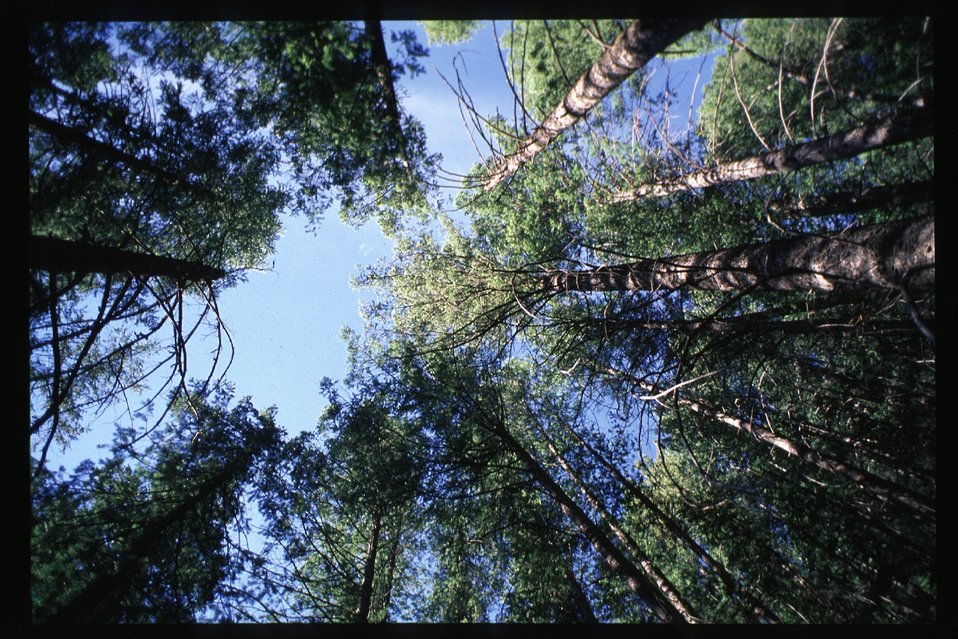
Recreation Scenic Biker Shoshone Field Office USRD Upper Snake River District Bald Mountain Trail Trees